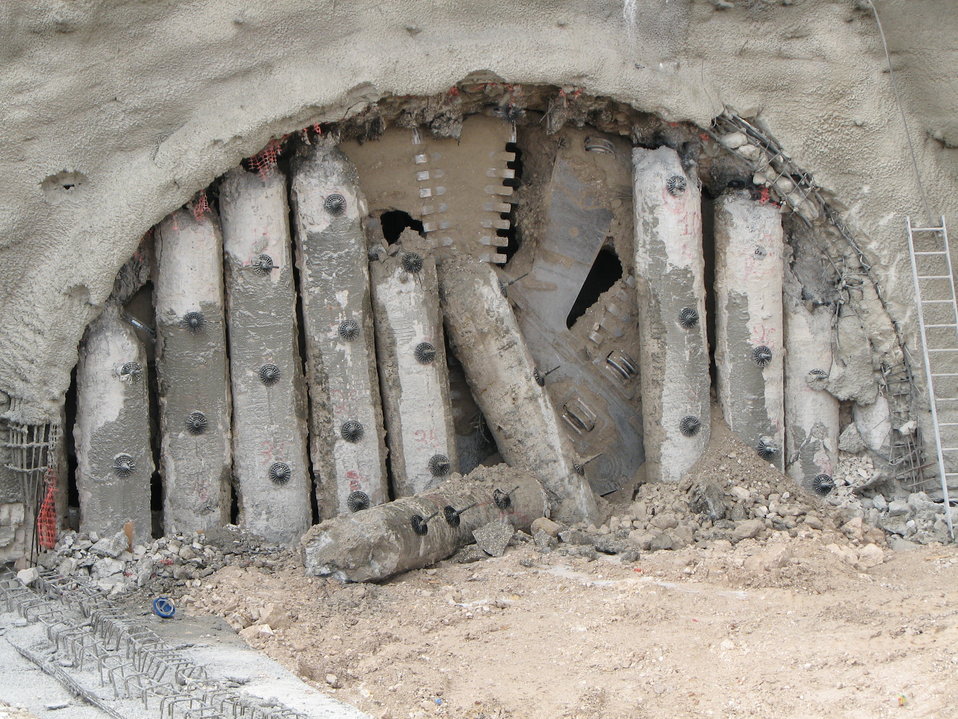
עברית: מכונת TBM פורצת החוצה ממנהרה מספר 1 בקו הרכבת המהיר לירושלים